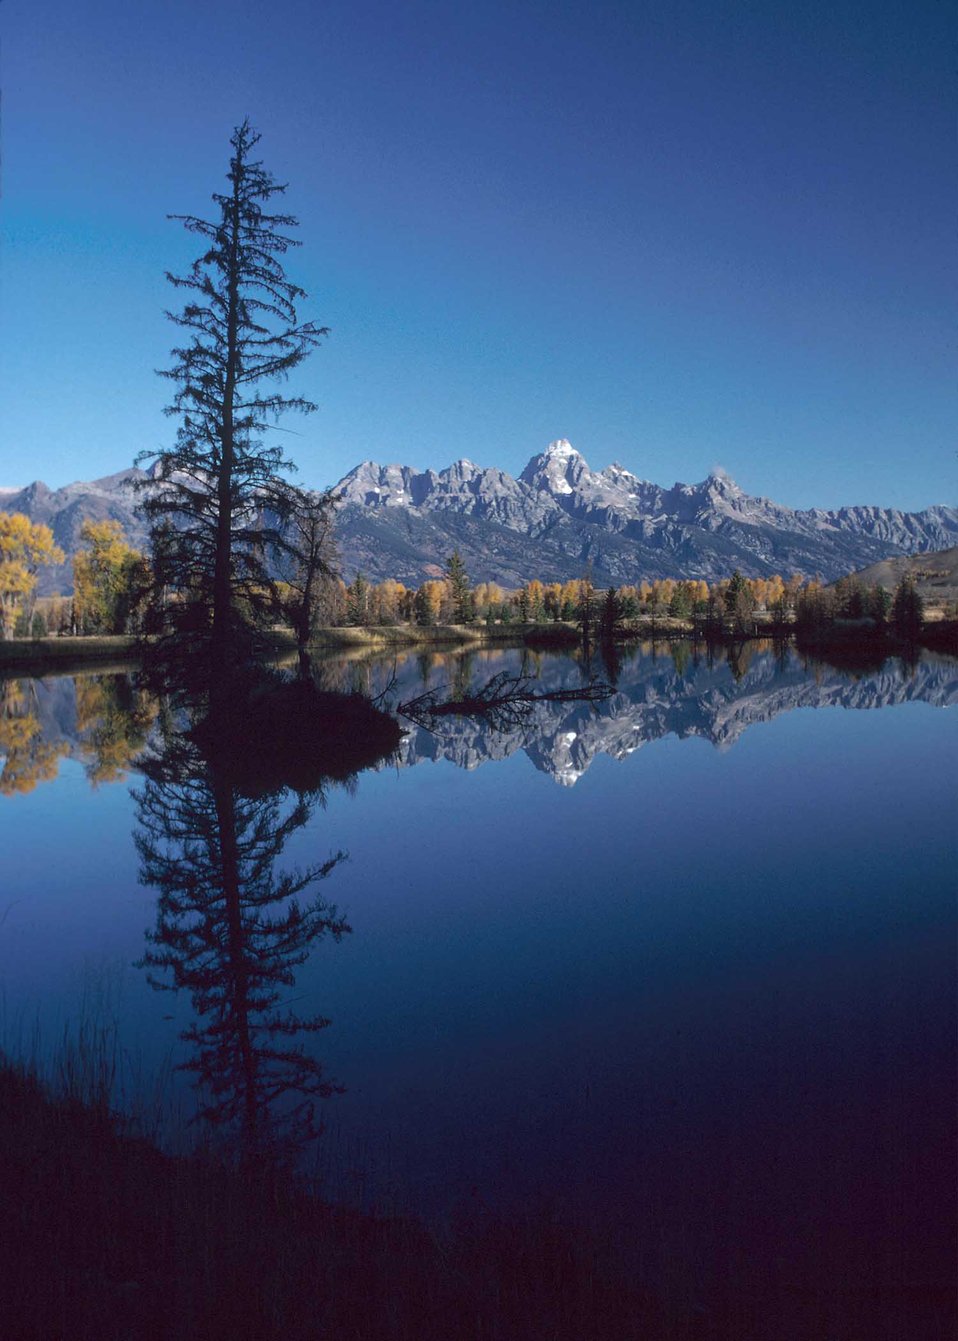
This constructed wetland near Jackson, Wyoming will provide good habitat for fish and other wildlife.